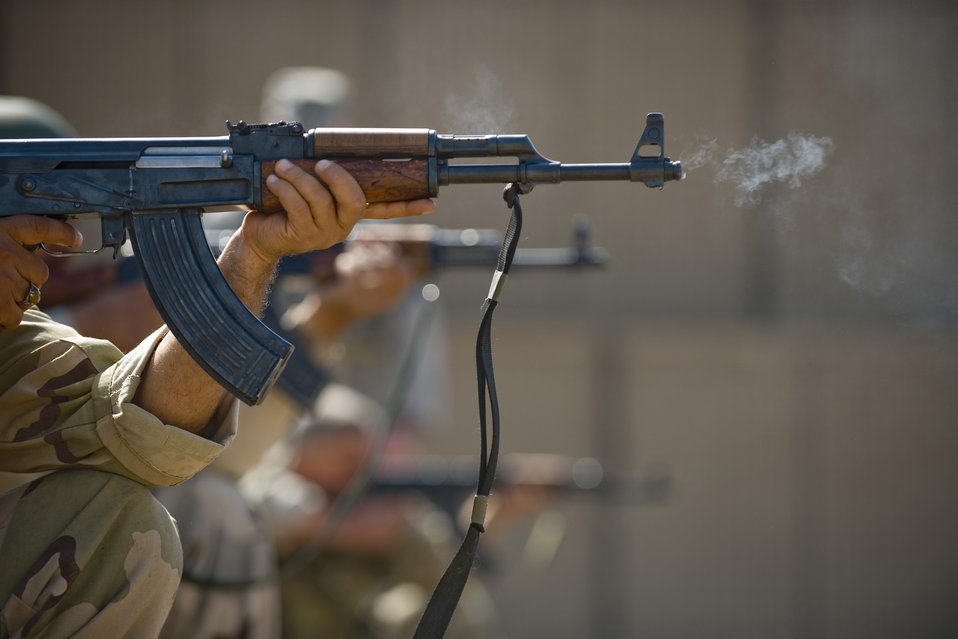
Airmen train Iraqi air force SFS

Iraqi airmen fire AK-47s during firing drills March 29, 2011. Members of the 447th Expeditionary Security Forces Squadron trained Iraqi security forces airmen ensuring weapons qualification and teaching defensive tactics, vehicle searches and other force protection measures.